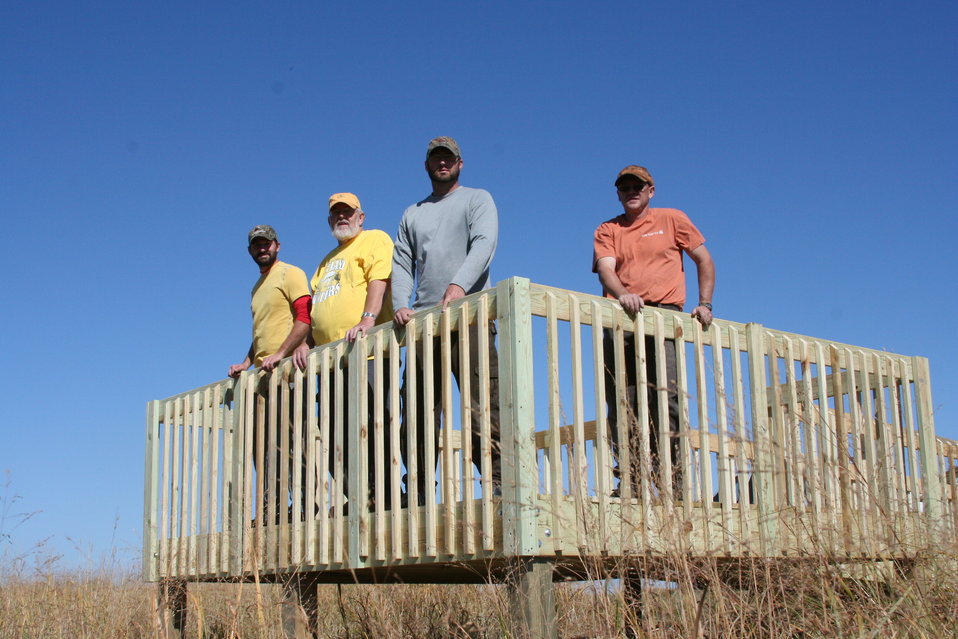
New Observation Deck

USFWS Staff and Volunteers posing on the newly-built observation deck.